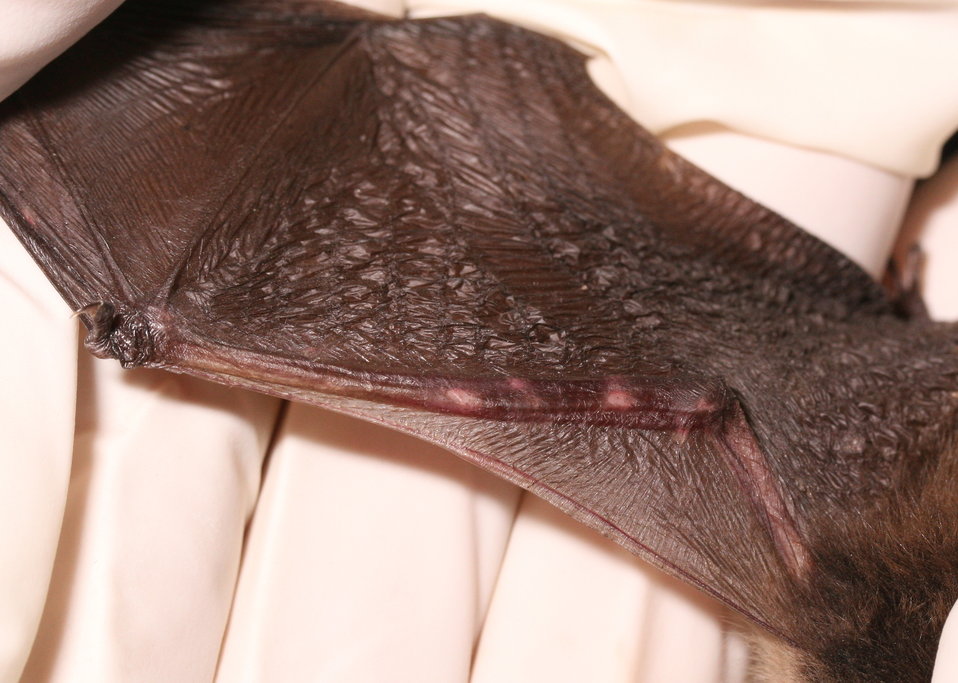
Possible sign of irritation on arm (pink patches) of bat emerging from hibernation, Barton Cave, Pa.

Credit: Photo courtesy Charlie Eichelberger, Pennsylvania Natural Heritage Program

Image size: 2444p (33.944) W x 1743p (24.208) H, 72ppi, 3.31 MB